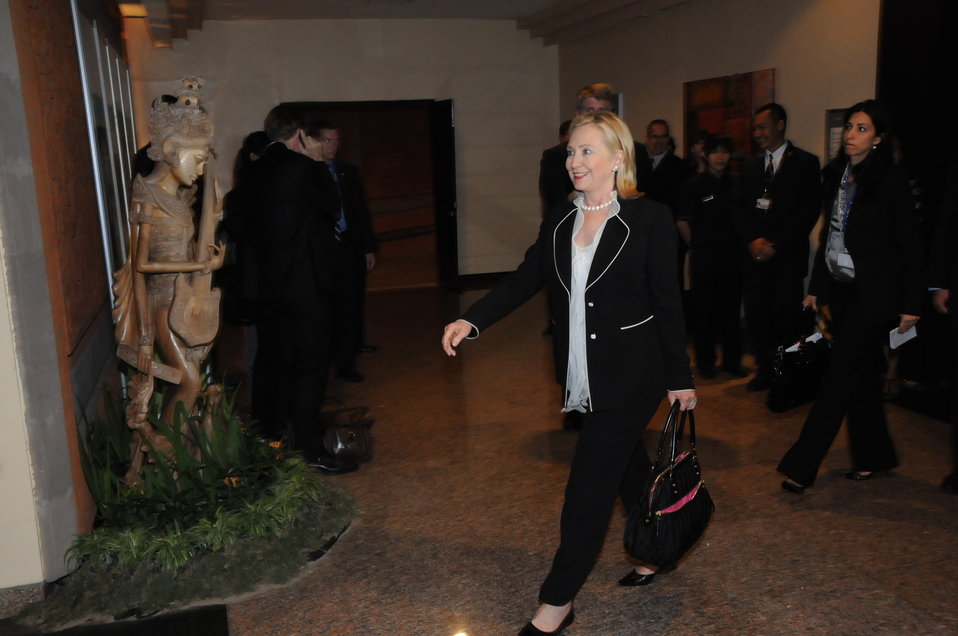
Secretary Clinton Walks to Her Bilateral Meeting With Australian Foreign Minister Rudd

U.S. Secretary of State Hillary Clinton walks to her bilateral meeting with Australian Foreign Minister Kevin Rudd in Bali, Indonesia, on July 22, 2011.